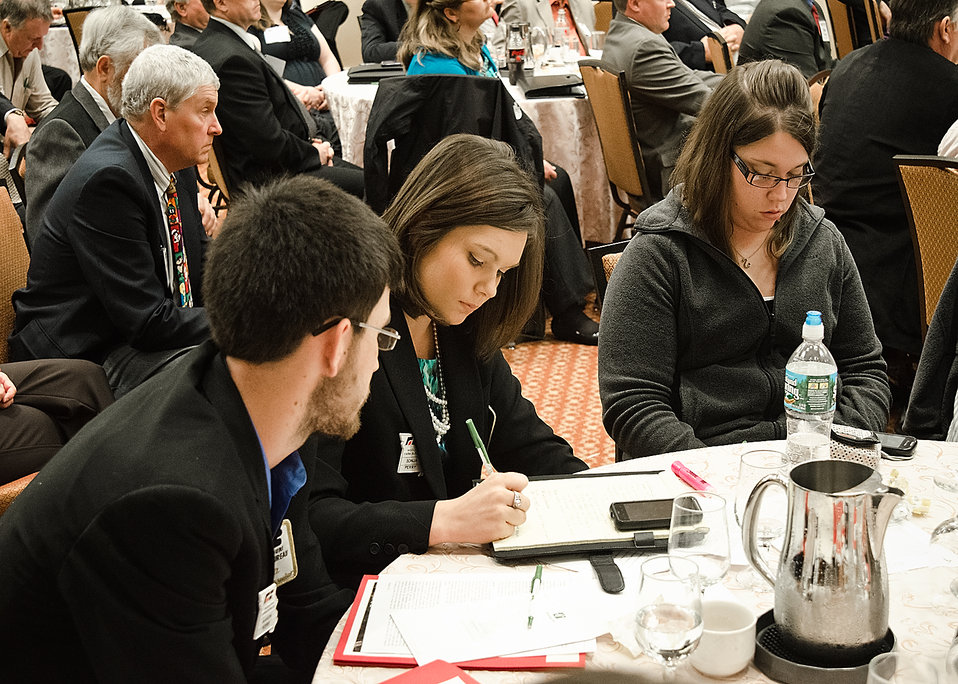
Missouri Farm Bureau Ambassador from Bowling Green, MO, Sonja Perr takes notes during Agriculture Secretary Tom Vilsack’s interview with Agritalk Host Mike Adams at a meeting with the Missouri Farm Bureau in Washington, D.C., on Tuesday, March 20, 2012. Agritalk, The Voice of Rural America is a radio network based in St. Louis, MO reaching out to the American Mid-West.